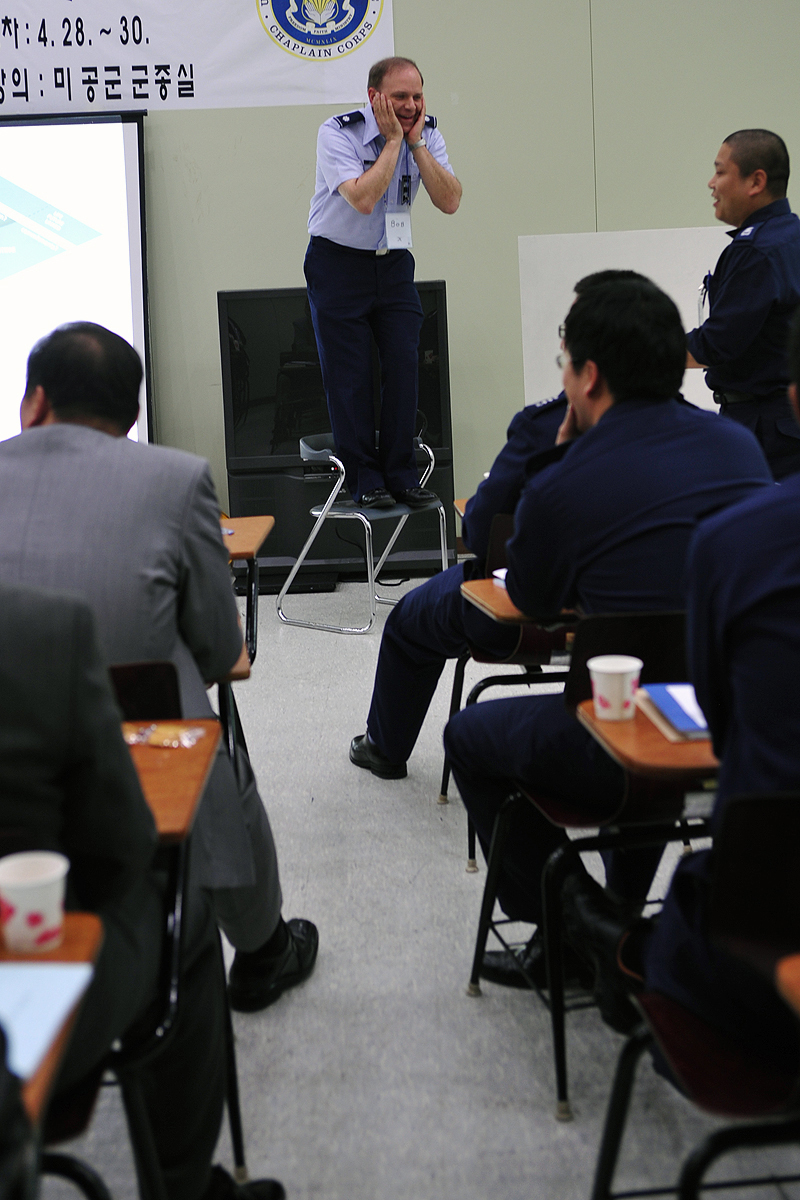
ASIST

Chaplain (Lt. Col.) Michael Heuer demonstrates a suicide intervention scenario with a group of South Korean air force chaplains April 27, 2010, during Applied Suicide Intervention Skills Training at Osan Air Base, South Korea. Chaplain Heuer is a staff chaplain at the Air Force Intelligence, Surveillance and Reconnaissance Agency at Lackland Air Force Base, Texas.